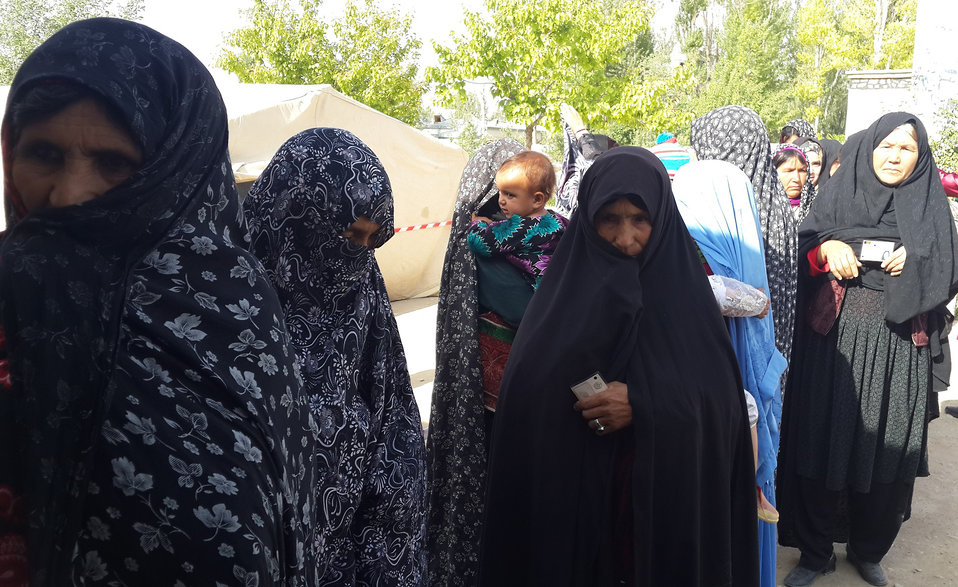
Women in front of a voting center in Ghor province.